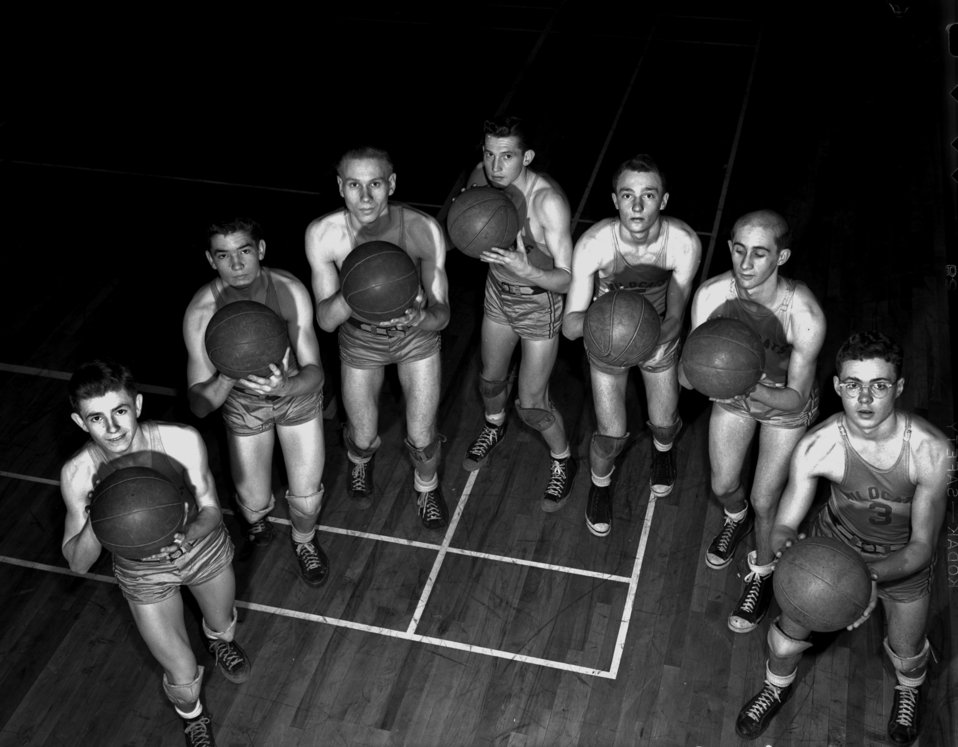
Oak Ridge High School Basketball Team

3228-2 DOE photo Ed Westcott 1-8-1947 Oak Ridge Tennessee